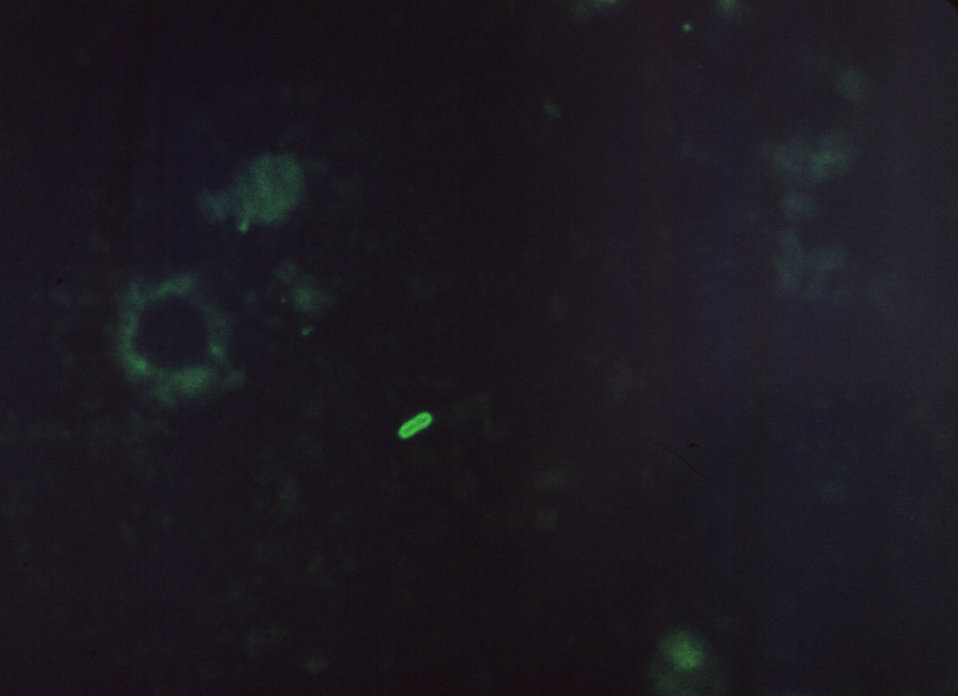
Magnified 98X, this heat-fixed, fluorescent antibody (FA)-stained photomicrograph of a sternal impression smear tissue sample, revealed the presence of a solitary Yersinia pestis, formerly Pasteurella pestis, Gram-negative bacterium.